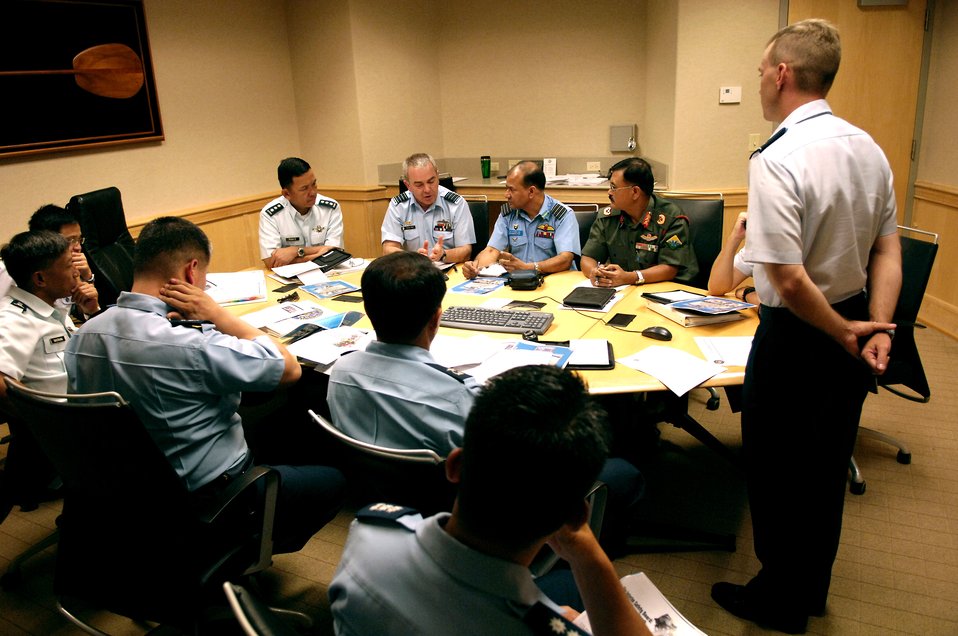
Communicating at PACRIM

Members of the Pacific Rim Airpower Symposium discuss mishap investigation procedures Sept. 19 during a breakout session at the Aloha Conference Center at Hickam Air Force Base, Hawaii. The PACRIM Symposium provides a forum to communicate the value of U.S. engagement with nations of the Asia-Pacific region and the United States' commitment to the region to internal, local, national and regional audiences.